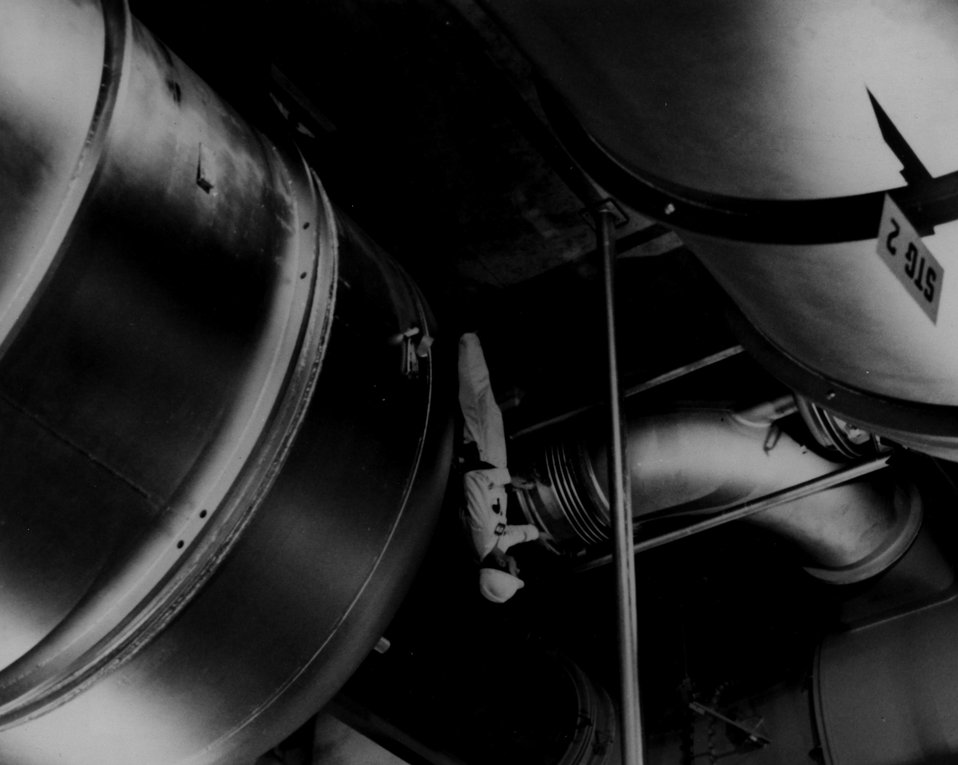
The gaseous diffusion process, which enriches uranium for use in atomic energy activities, is done at AEC-owned, contractor-operated plants in Kentucky, Ohio, and Tennessee. In the process, gaseous uranium hexafluoride (UF6) is put through a series of barriers, which partially separate the highly fissionable, lighter and faster-moving uranium-235 atoms from the heavier and slower-moving uranium-238 atoms that make up the bulk of the material. c. 1971